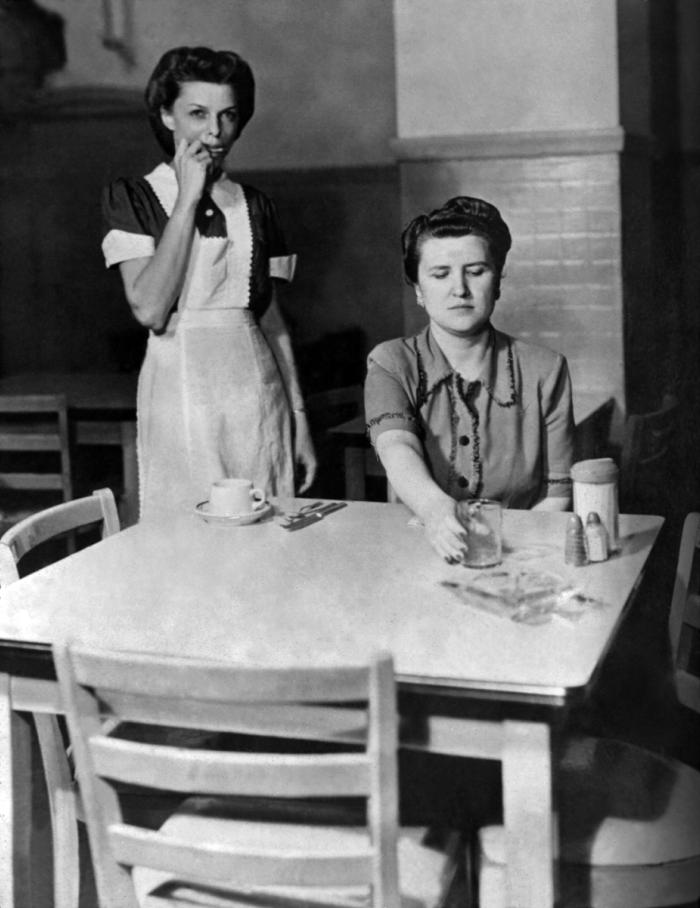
This historic 1950s image depicted a restaurant food server whose behavior was increasing the risk of transferring a communicable infection to the seated patron. The server's hand was inappropriately in contact with a pencil she'd been holding in her mouth, which would have contaminated her hands that she'd use to touch items placed on the table. In this way, the server increased the chance of communicating an infectious disease to the customer.